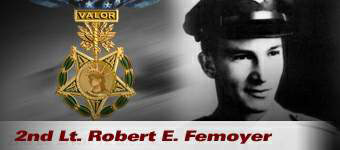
2nd Lt. Robert E. Femoyer is a Medal of Honor recipient for actions during a mission in 1944.